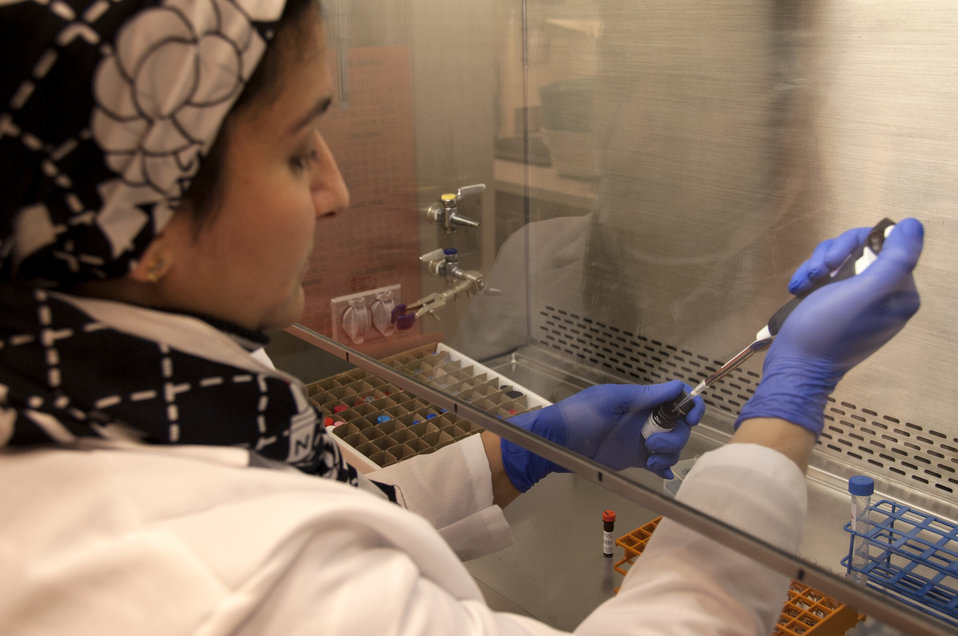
Stem Cell Research (0456)

Heba Degheidy, M.D., Ph.D., a post-doctoral research fellow at FDA, works with stem cell samples in an FDA laboratory on the National Institutes of Health campus in Bethesda, Md.

To learn more about stem cell research, read this FDA Consumer Update:

Adult Stem Cell Research Shows Promise

This photo is free of all copyright restrictions and available for use and redistribution without permission. Credit to the U.S. Food and Drug Administration is appreciated but not required.

Privacy and use information: www.flickr.com/people/fdaphotos/